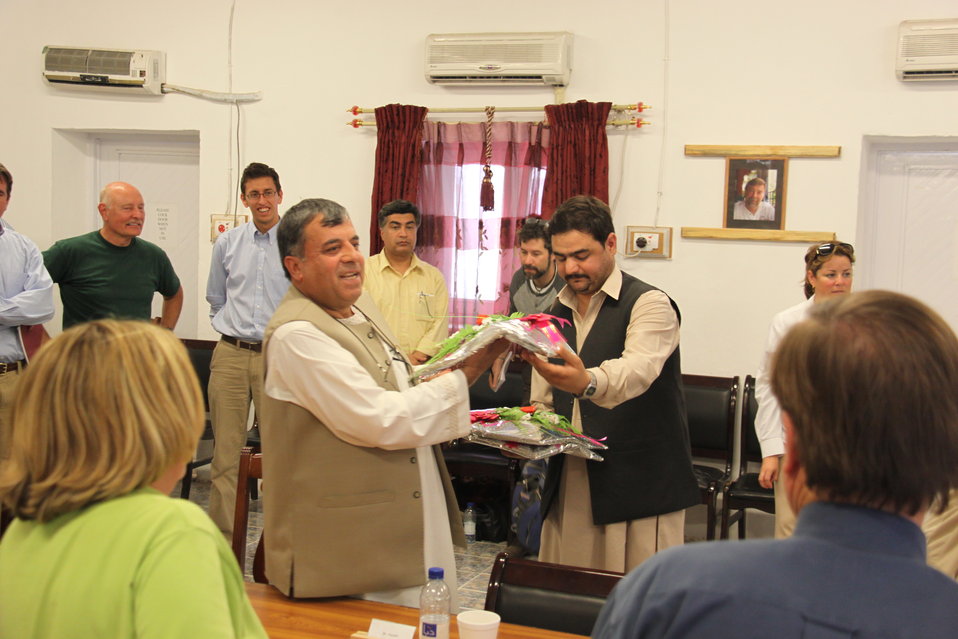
Meeting with Local Leaders in Kandahar